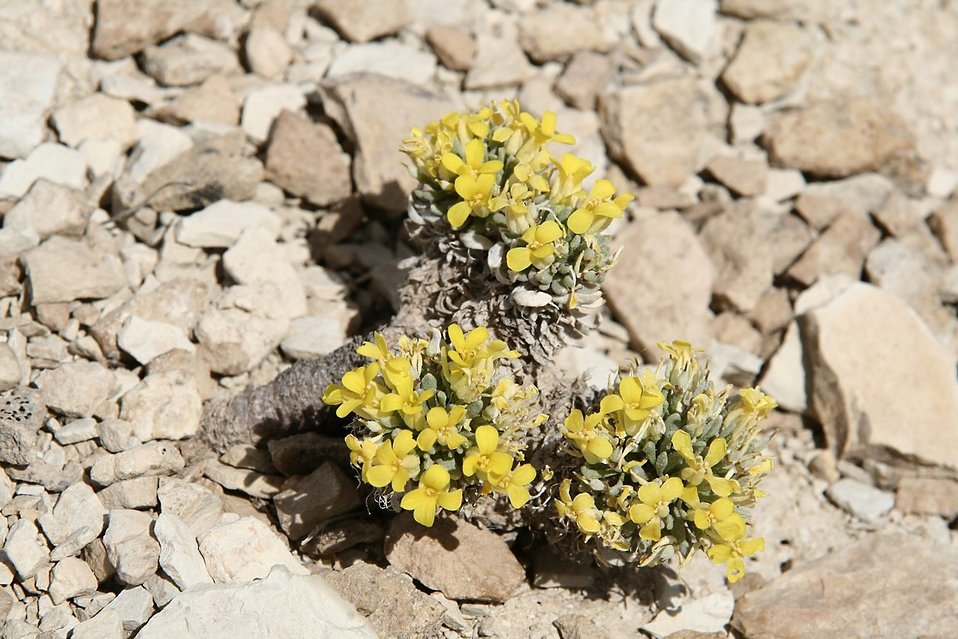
Dudley Bluffs Bladderpod

A Dudley Bluffs bladderpod where erosion has exposed the woody underground roots.

Photo credit: USFWS

...........................................................................

BACKGROUND:
The Dudley Bluffs bladderpod (bladderpod - Physaria congesta) and the Dudley Bluffs twinpod (twinpod - Physaria obcordata) are limited or endemic to barren white shale outcrops and specific soil tongues in the Piceance Basin of Rio Blanco County, Colorado. The bladderpod is known from eight populations, consisting of roughly 546,000 plants across an estimated 930 acres, while the twinpod is known from 11 populations, consisting of roughly 25,000 plants across an estimated 318 acres. Approximately 88% of the total occupied bladderpod and twinpod habitat occurs on public lands managed by the Bureau of Land Management. All known populations occur within a 20 square mile area.

When these two species were listed in 1990, natural gas drilling was not considered a threat. Previously considered inaccessible, these two species sit atop the nation’s biggest reservoir of natural gas. Fracturing technique advancements, however, have recently made these natural gas deposits accessible with 95 percent of the development near these rare plant populations. Rio Blanco County currently has over 2,600 natural gas wells, but predictions estimate there may be as many as 19,000 wells within 15 years, more than any other Colorado county. These wells and their associated infrastructure (pads, pipelines, roads, and traffic) are impacting populations and habitat of both the bladderpod and the twinpod. The Bureau of Land Management, the Colorado Natural Areas Program, the U.S. Fish and Wildlife Service (Service), and other partners have been working together to better document and study these impacts to the bladderpod and the twinpod.

Oftentimes management for rare plant species does not adequately consider impacts outside of the immediate area where a plant is found. For example, ecological effects from dust generated by heavy traffic on dirt or gravel roads can extend more than 300 feet from the road. Or, for every vehicle traveling one mile of unpaved roadway once a day, every day for a year, 2.5 tons of dust can be deposited. Effects to plants from dust can be numerous, including changes to a plant’s photosynthesis, respiration, transpiration, water use efficiency, leaf conductance, growth rate, plant vigor, and gas exchange rates. Changes to plant communities and species’ abundances within these communities have also been linked to dust deposition. Aside from dust, roads themselves alter ecosystems by importing invasive nonnative species, altering hydrology, and changing sedimentation patterns. In addition, both the twinpod and the bladderpod require pollinators for reproduction. Impacts to these solitary ground or twig nesting bees (especially their nesting habitats) may impact these species’ reproduction. We consider all of these effects to be part of “dispersed development” impacts. Our research hopes to address impacts to these two species, their associated plant communities and their pollinators. We are hopeful this research will allow land managers to better evaluate and address threats from this dispersed development.